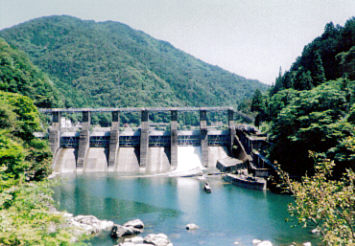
Dam